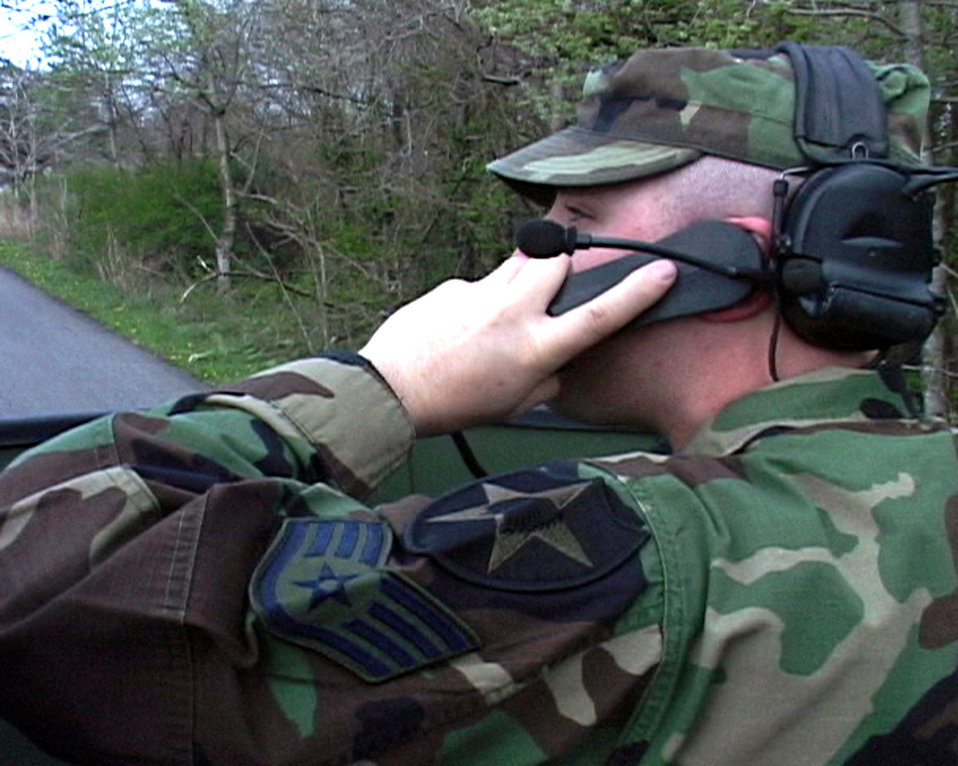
Air controllers help ensure accuracy of air strikes

Staff Sgt. Krystoffer Bowman talks an F-16 Fighting Falcon pilot onto a target May 7 at Misawa Air Base, Japan. Sergeant Bowman helps pilots work with joint terminal attack controllers before deploying to fight the war on terrorism. Sergeant Bowman is a joint terminal attack controller.